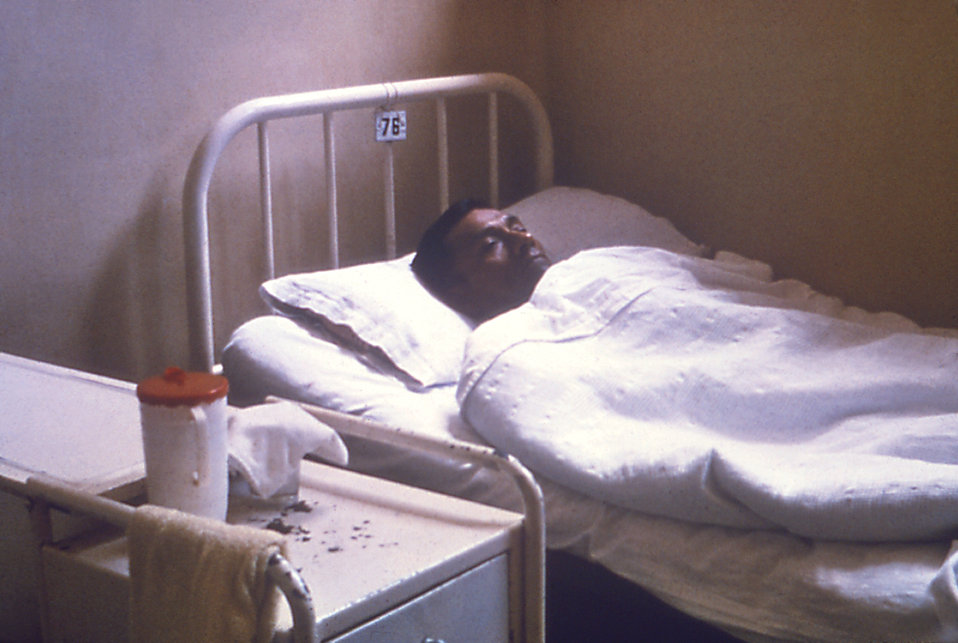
This patient presented with Brucellosis, which is also known as "Malta fever" and "undulant fever".